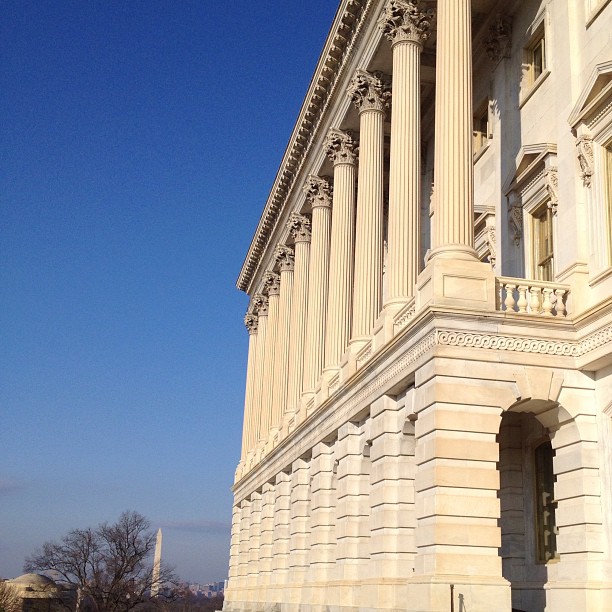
Blue skies at the Capitol this morning.